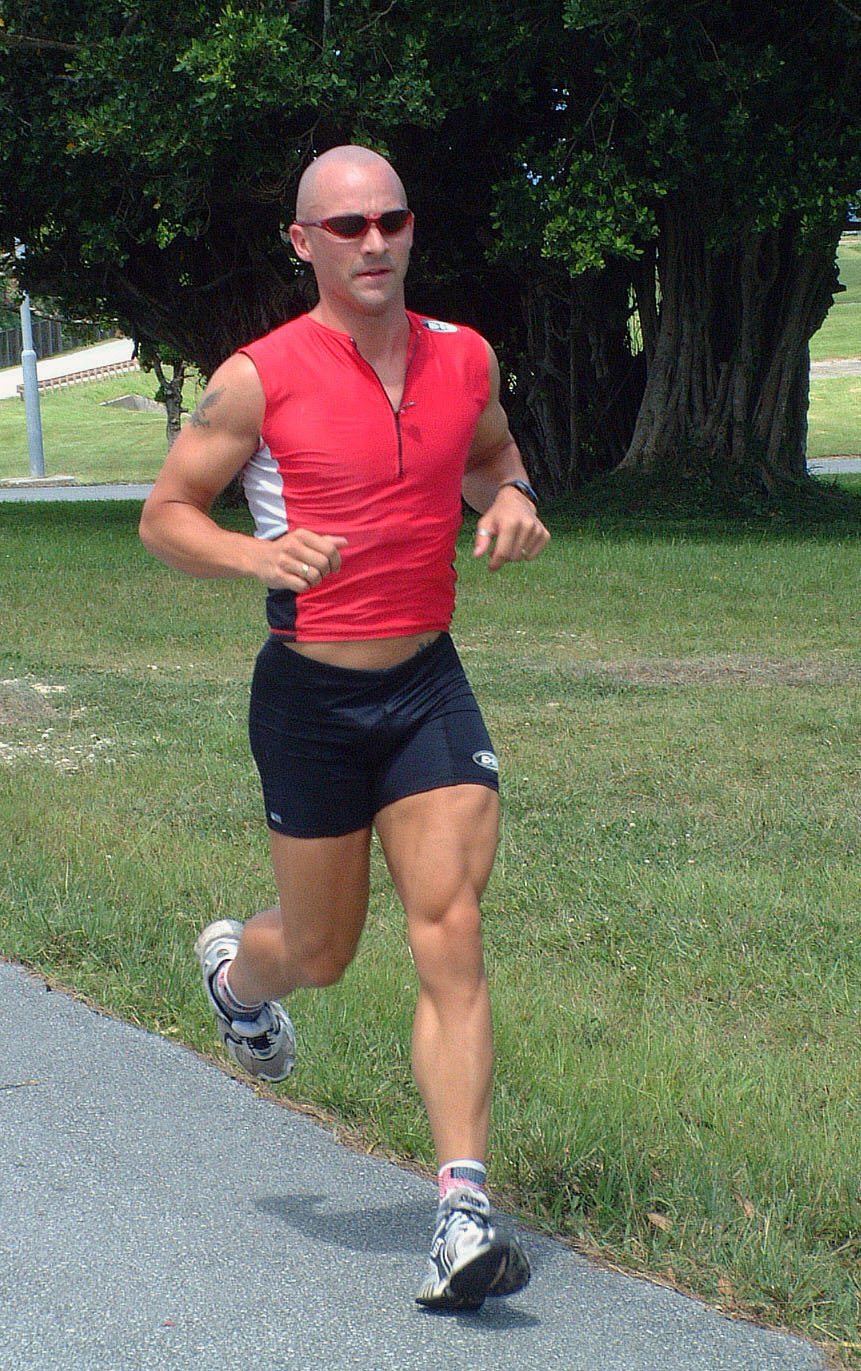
Ironman4

KADENA AIR BASE, Japan -- Shawn Hnatko trains here for the Ironman Triathlon World Championships in Hawaii on Oct. 18. During the competition, he will swim 2.4 miles, bike 112 miles and run a 26.2-mile marathon.